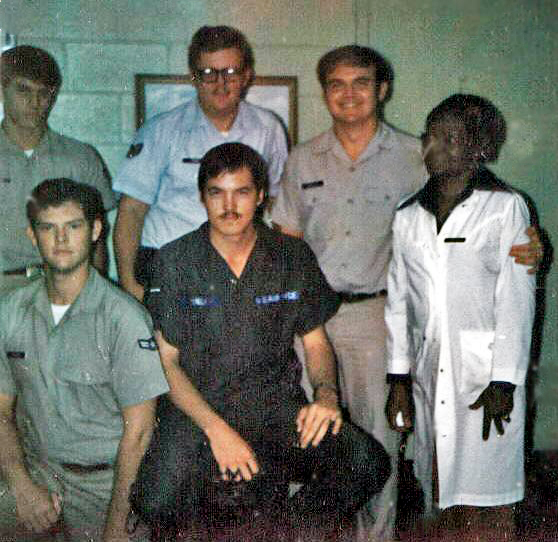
Troy Bunch, Chief, Branch of Multimedia Technology in External Affairs, served in the Air Force at Carswell Air Force Base in Texas from 1975 to 1979. He attained the rank of Staff Sergeant (E-5).